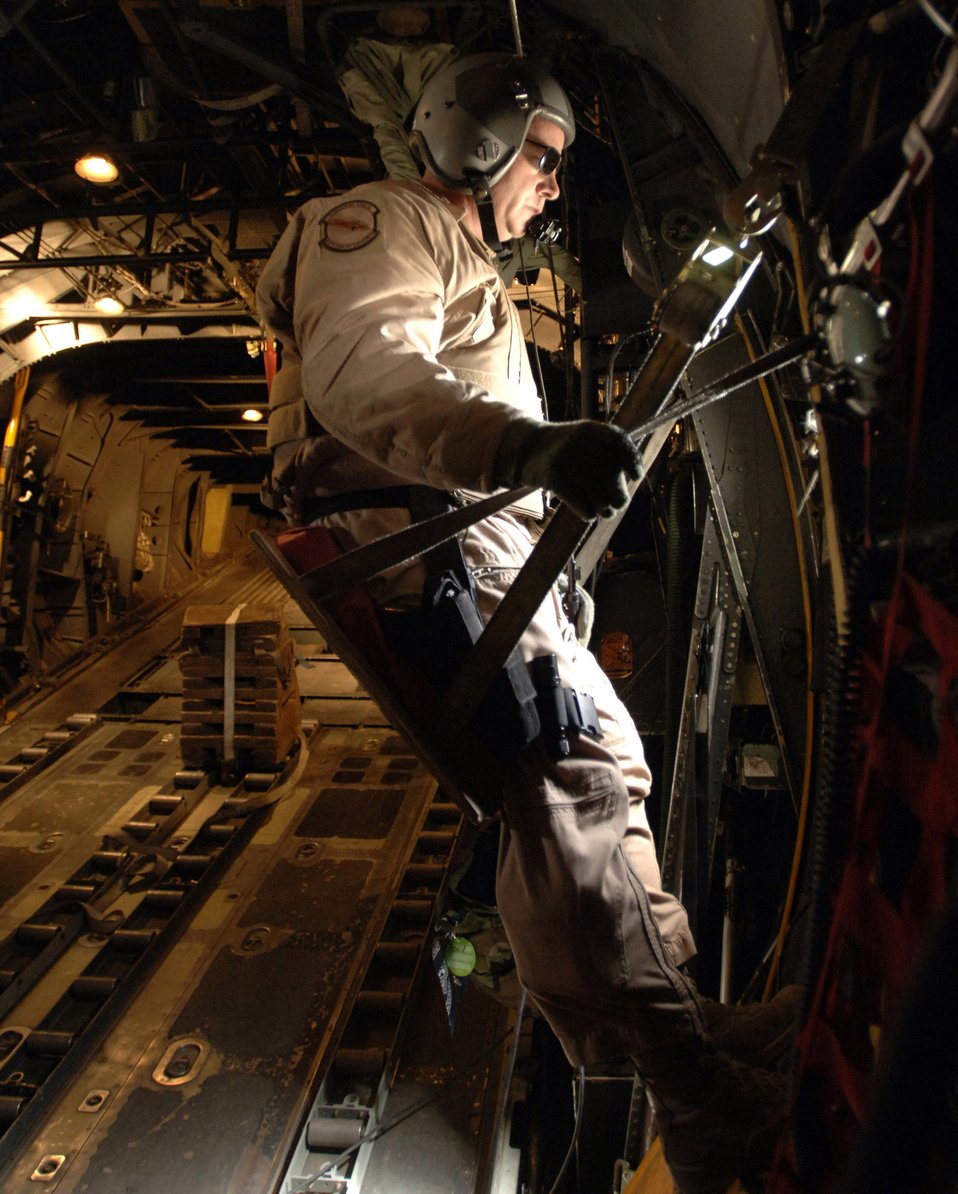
Leaflet airdrop mission delivers clear message to Taliban

Master Sgt. Jim Read, a C-130 Hercules loadmaster, scans the terrain for enemy activity March 6 while he and his crew prepare to drop 30,000 warning leaflets over the southeastern mountains of Afghanistan. The leaflet airdrop mission is contributing to Operation Achilles launched by International Security Assistance Force to help improve security and the Afghan people's quality of life.